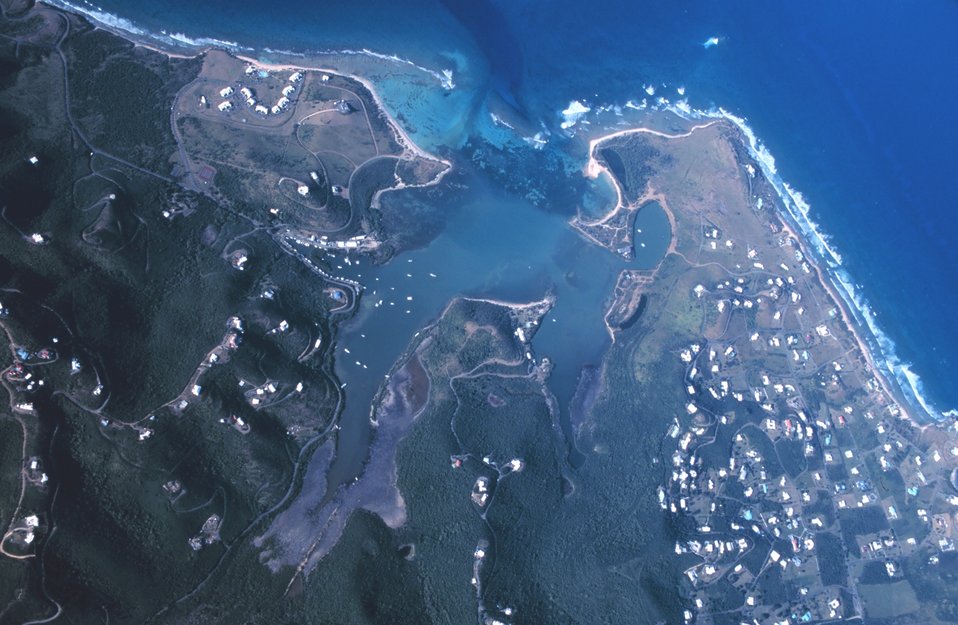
Aerial view of Salt River Bay